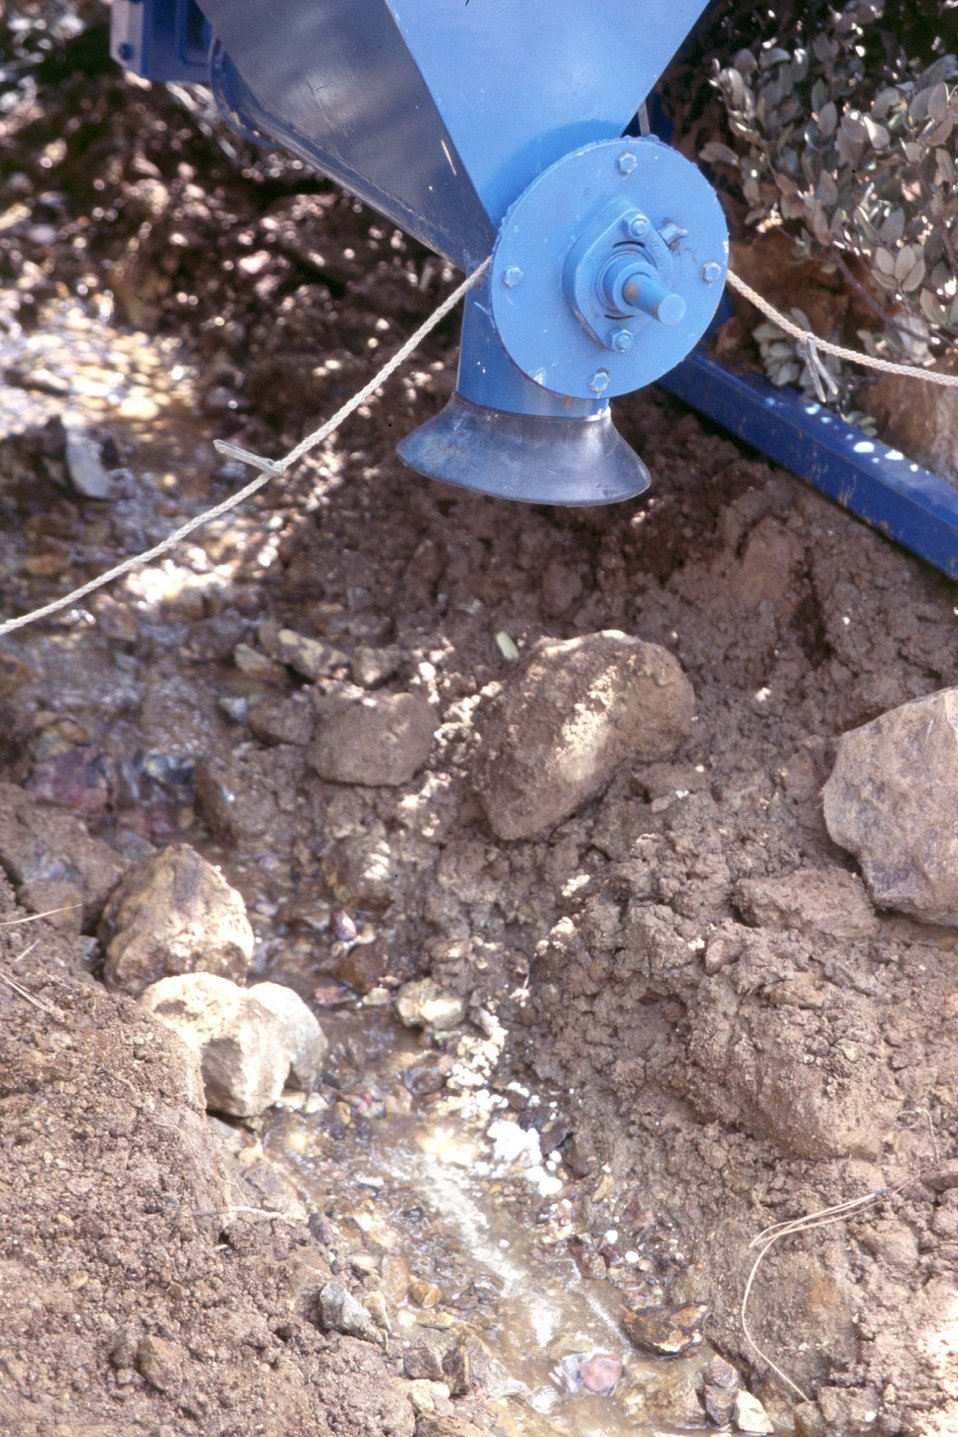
Almeda Mine, Medford District, Aquafix. Machine dispensing lime.